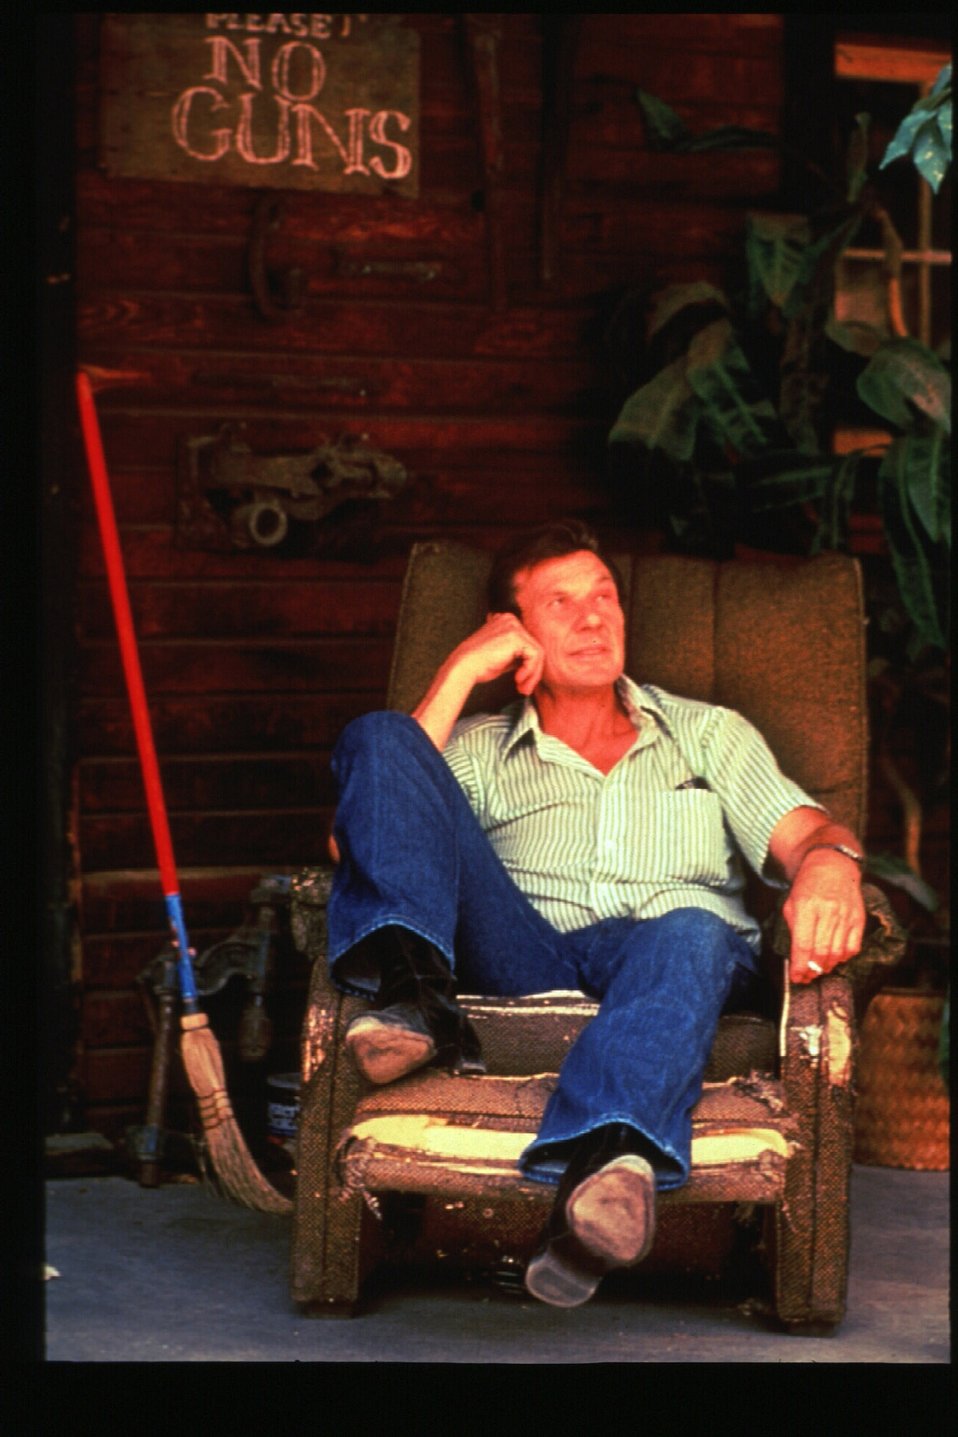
Boise Foothills Fire Danskin Mountains and South Fork of Boise River Four River Field Office LSRD Lower Snake River District